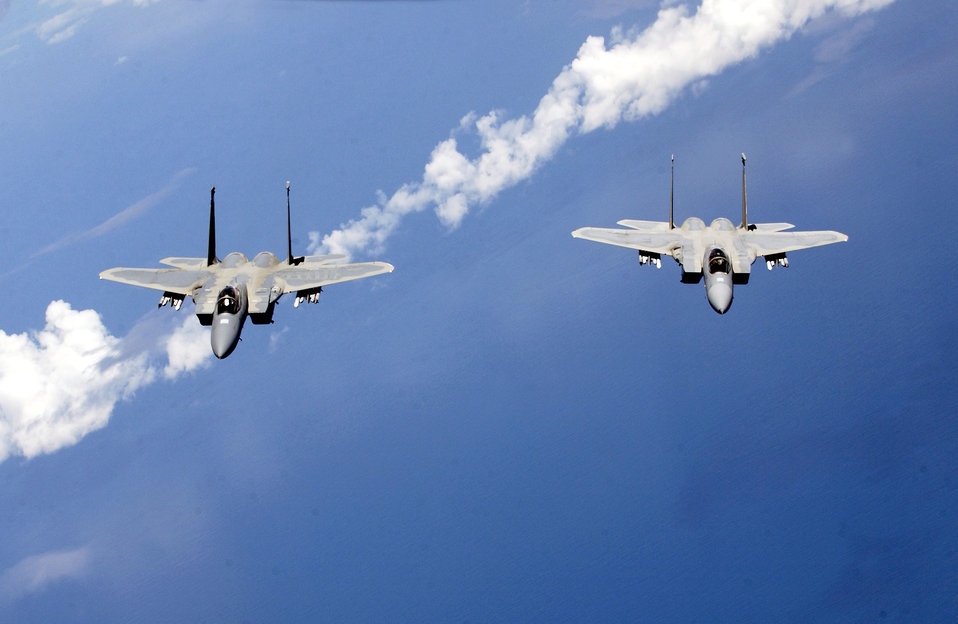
Refueling mission

F-15 Eagles from the Air National Guard's 125th Fighter Wing fly near Jacksonville International Airport, Fla., on July 20. The F-15s and KC-135 Stratotankers from the 434th Air Refueling Wing were training in mid-air refueling.